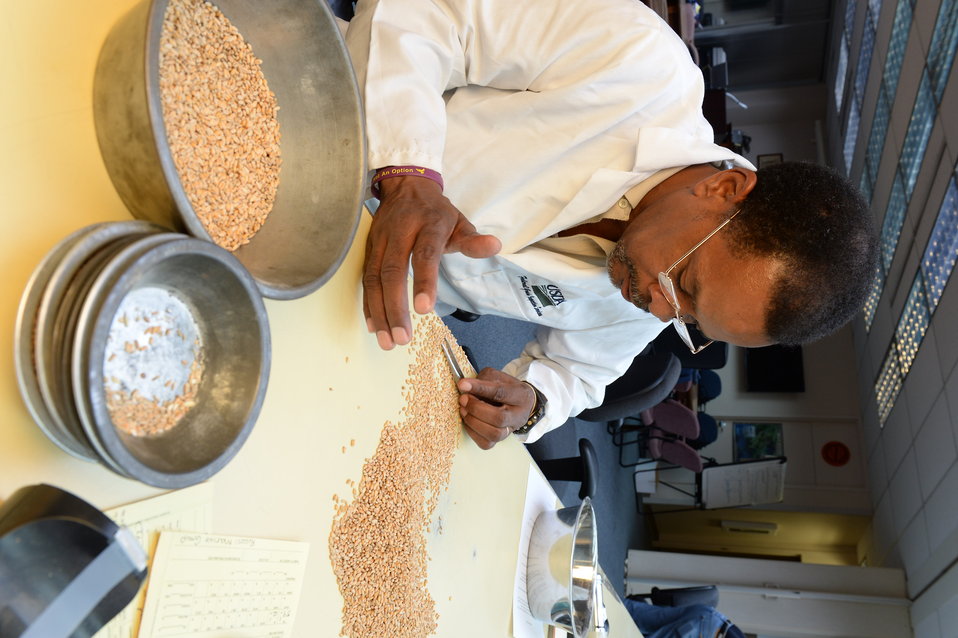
A U.S. Department of Agriculture (USDA) Grain Inspection, Packers and Stockyards Administration (GIPSA) Federal Grain Inspection Service (FGIS) scientist tests wheat at the FGIS inspection laboratory in New Orleans, LA on Monday, Nov. 18, 2013.